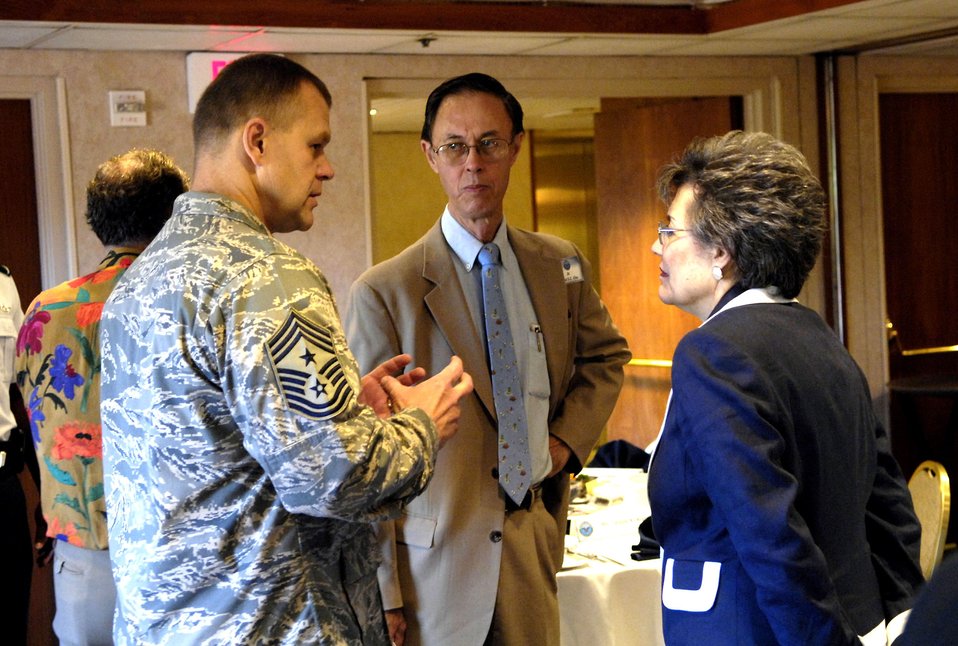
Defense Leaders build on strong relations in Hawaii

Chief Master Sgt. James Roy talks with Under Secretary of Defense for Personnel and Readiness Dr. David S. C. Chu and Deputy Under Secretary of Defense for Military Community and Family Policy Leslye A. Arsht during a breakfast meeting July 18 at the Hale Koa Hotel in Honolulu. The secretaries are in Hawaii to discuss state and Department of Defense partnership issues. Chief Roy Chief Master Sergeant James A. Roy is the command chief master sergeant for United States Forces Japan and 5th Air Force.